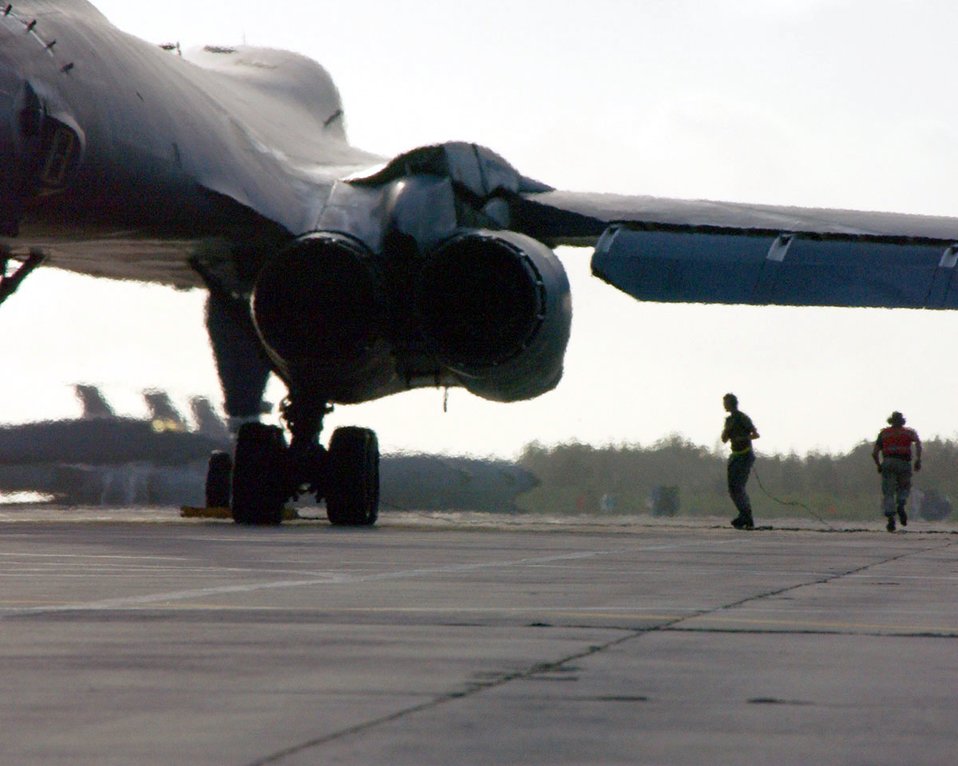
B-1 ready to fly

OPERATION ENDURING FREEDOM -- Crew chiefs prepare a B-1 Lancer for takeoff after the aircrew has boarded and started the engines. They are in constant communication with the aircrew until the pilot begins taxiing.